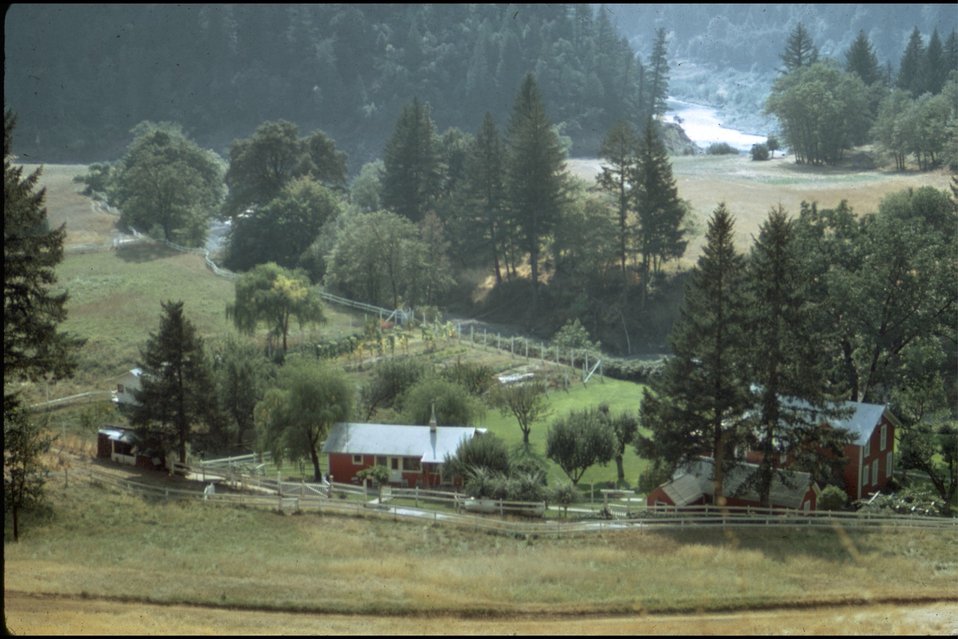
Rogue River Ranch, Mule Creek. Looking toward Mule Creek Caretaker's house.